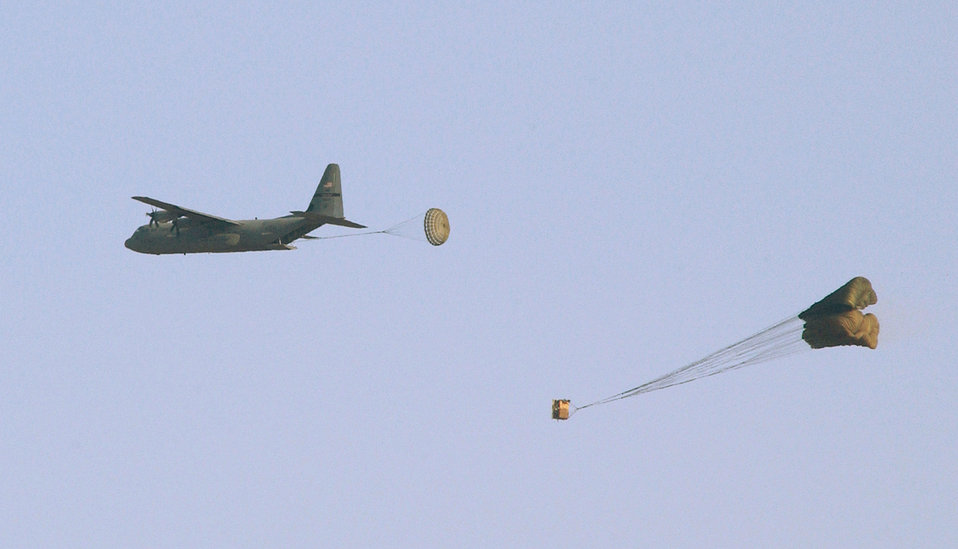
C-130J testers accomplish first five-bundle sequential airdrop

EDWARDS AIR FORCE BASE, Calif. -- A J-model C-130 Hercules flies over a range here recently, successfully completing the first five-bundle sequential low velocity airdrop. The bundles weighed 40,100 pounds and landed 1,000 feet apart and only five yards off the planned impact point.